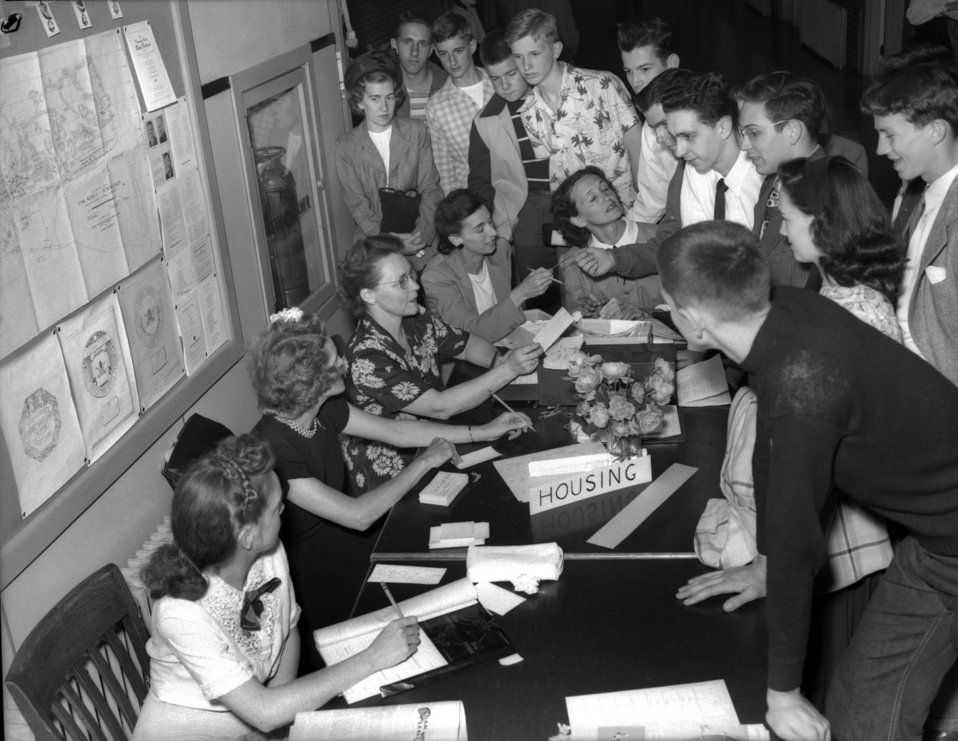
Tennessee State Band Festival Oak Ridge

4500-8 DOE photo by Ed Westcott

Tennessee State Band Festival Oak Ridge Tennessee 4/29/1948